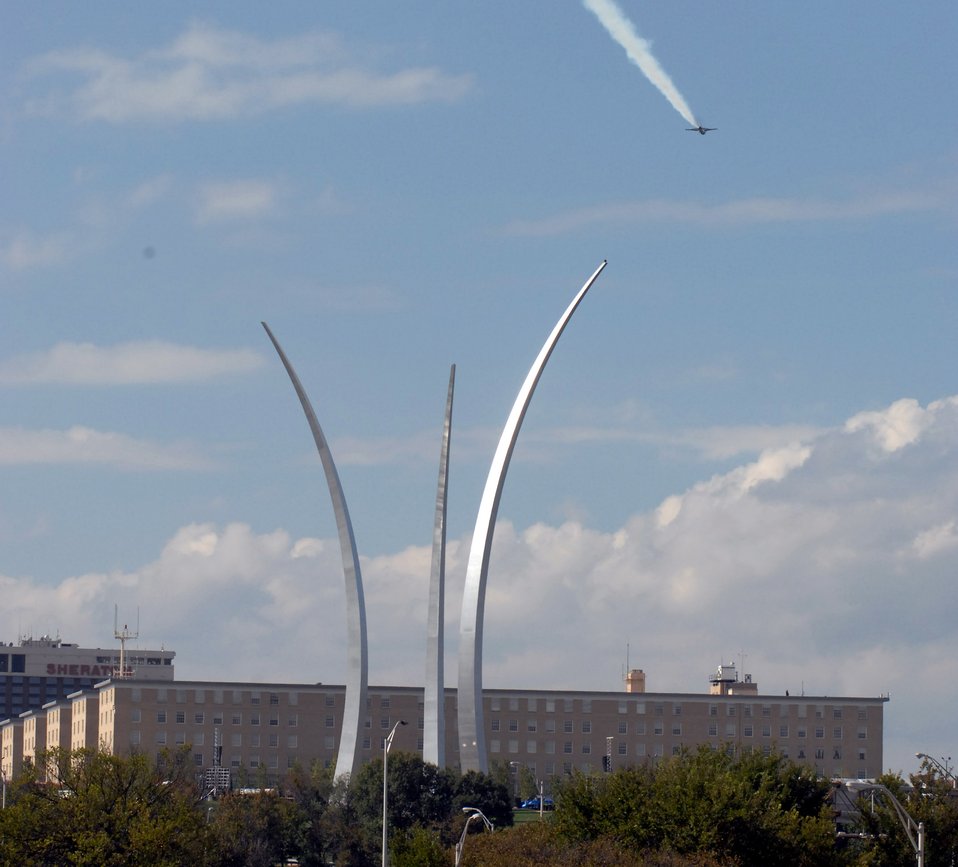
Thunderbirds practice over Air Force Memorial

An Air Force Thunderbirds demonstration team F-16 Fighting Falcon flies over the Air Force Memorial Oct. 12 in a practice for the Oct. 14 opening ceremonies for the memorial.